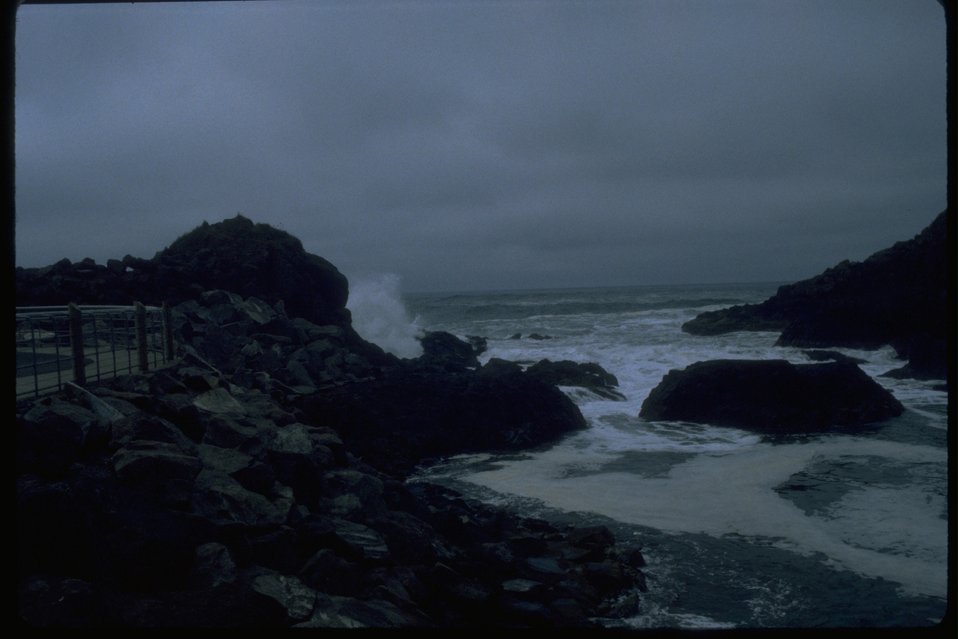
Storm waves at Quarry Cove in the Yaquina Head ONA.